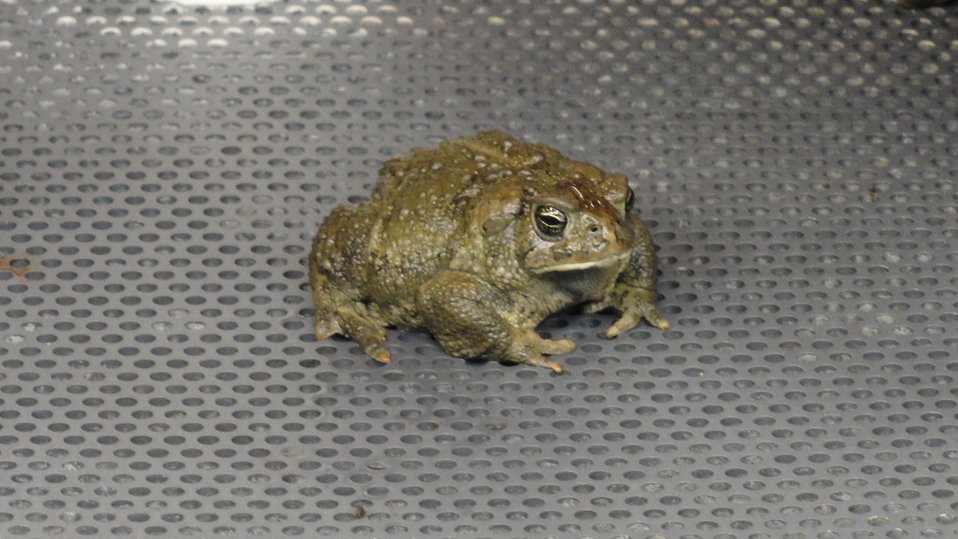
Visiting Saratoga National Fish Hatchery

In April of 2014, regional office employees visited Saratoga National Fish Hatchery to learn more about its efforts towards recovering the Wyoming toad (Bufo baxteri).

The hatchery adopted a unique role in becoming the first unit in the National Fish Hatchery System to become involved in rearing endangered amphibians. The Wyoming toad was a common sight on areas of the Laramie Plains, Albany County, Wyoming, into the early 1970s but the species' populations crashed in the mid-1970s. The Wyoming toad was listed as endangered by the U.S. Fish & Wildlife Service in January 1984. Found only in southwestern Wyoming, the Wyoming toad is considered the most endangered amphibian in North America. The hatchery maintains a captive population for breeding, rearing, and refugia, and the offspring from this program will be used for reintroduction efforts.